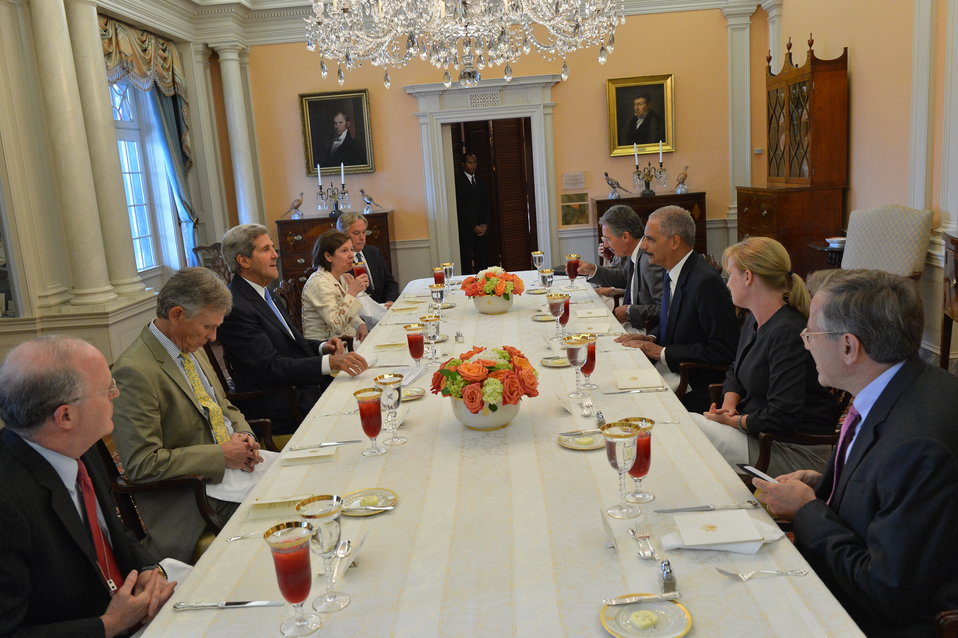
Secretary Kerry meets with Attorney General Eric Holder

U.S. Secretary of State John Kerry meets with U.S. Attorney General Eric Holder at the U.S. Department of State in Washington, D.C., on September 5, 2013.